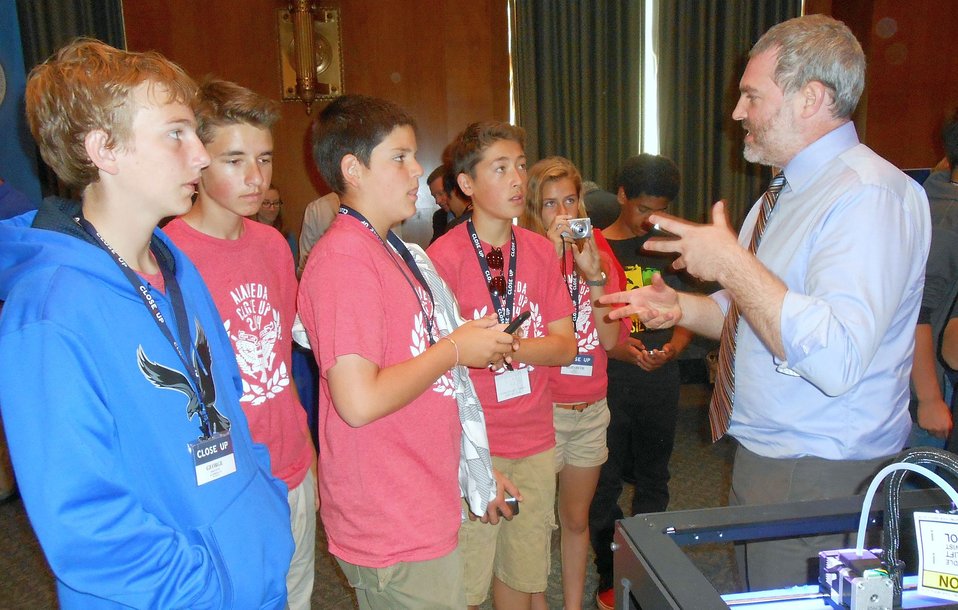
NIST Public Affairs Communication Specialist Mark Esser (right) describes 3D Printing and Additive Manufacturing research at NIST to Alameda California Project Close Up High School students as part of the Department of Commerce Day on the Hill event in the Dirksen Senate Office Building.